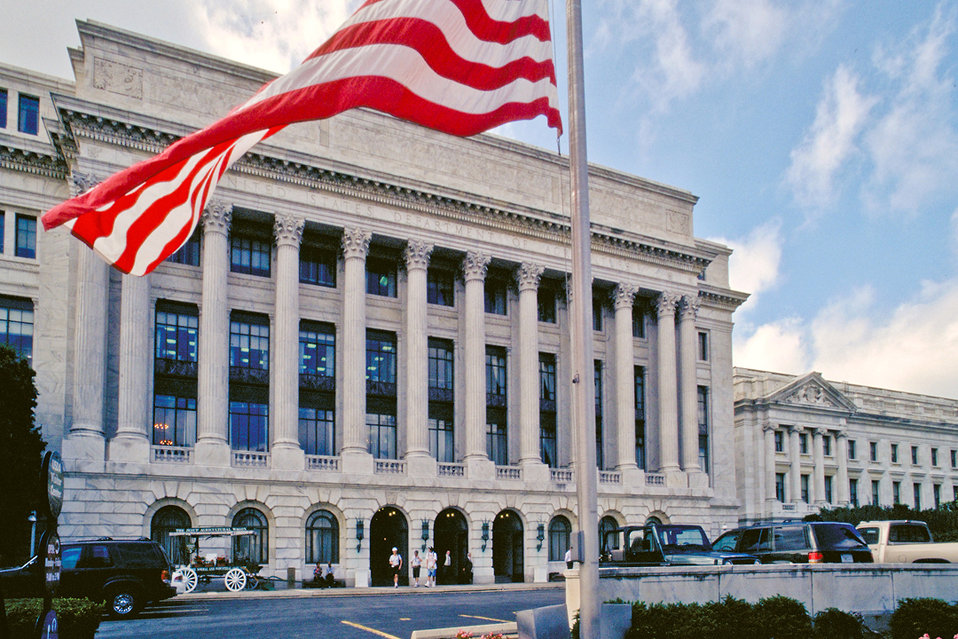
The Jamie L. Whitten, Federal Building, U.S. Department of Agriculture in Washington, D.C.